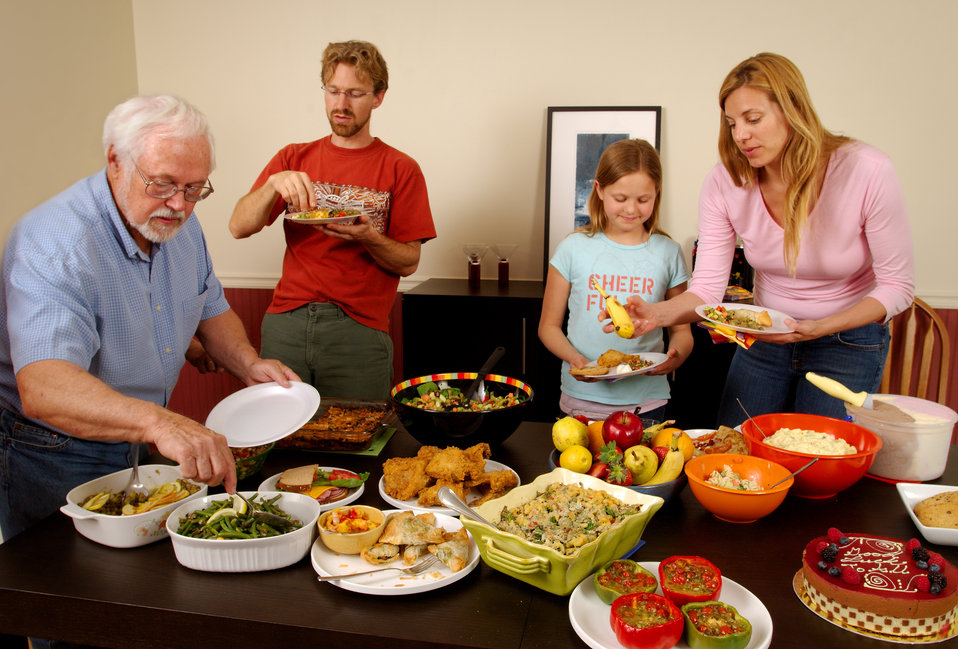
Serving food at a dinner party

Here, a group of dinner party attendees, were gathered around a table serving themselves from a wide variety of foods, representing a number of different food groups: grains, fruits, vegetables, milk products, meats/poultry/fish, and nuts/seeds/legumes.